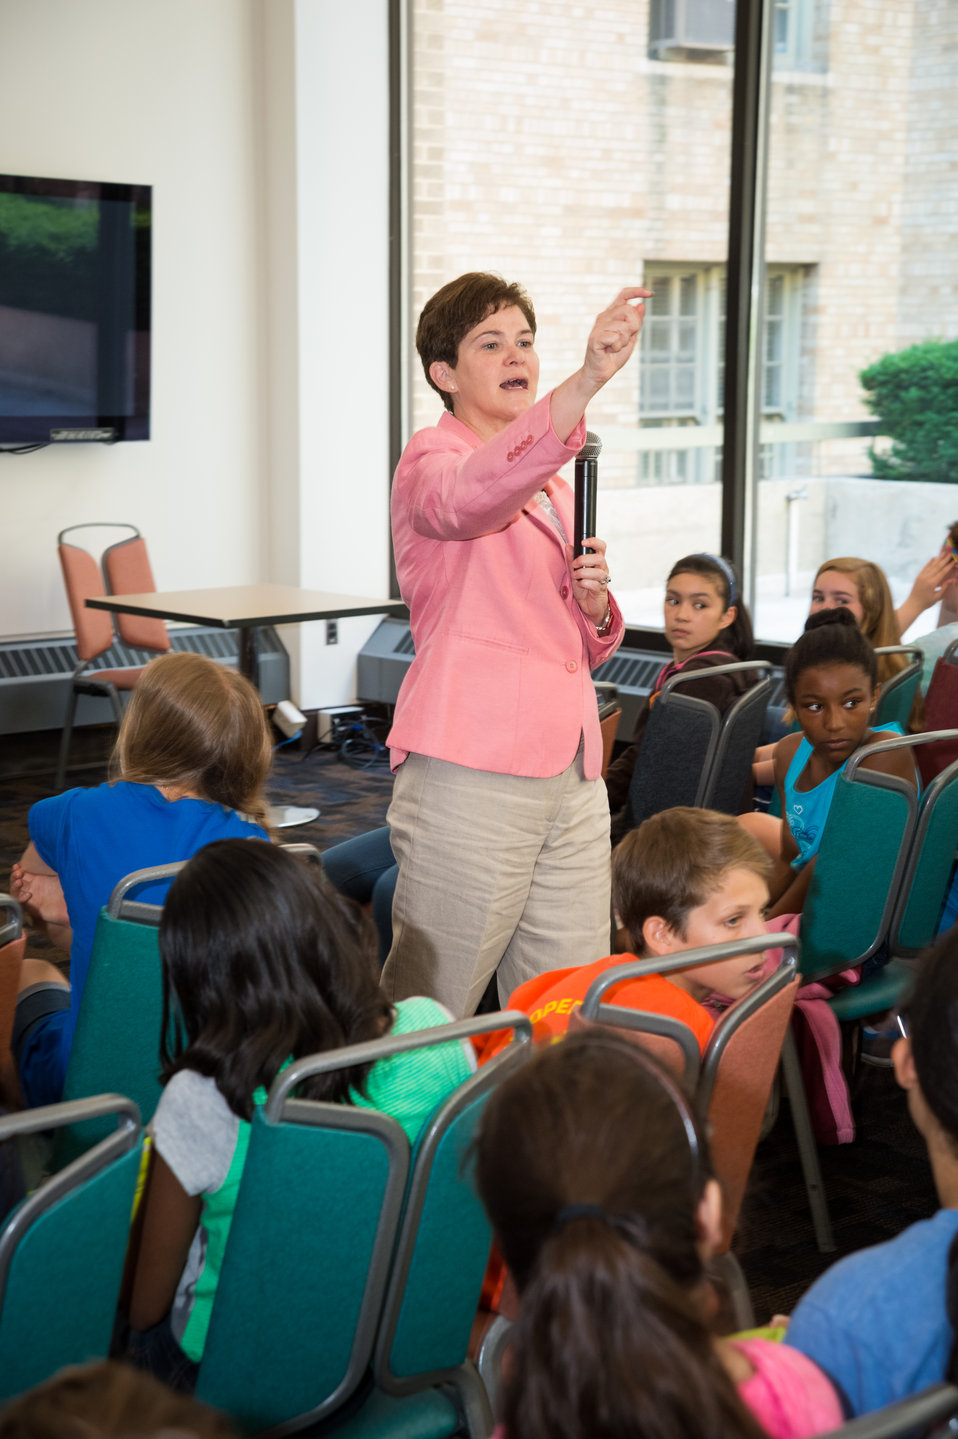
Agriculture Deputy Secretary Krysta Harden speaking with students from the Alice Deal Middle School, Washington, DC students during their visit to the United States Department of Agriculture (USDA) in Washington, DC, Wed. Jun. 4, 2014. The students studied hunger, food security, how to prevent hunger and organizations involved in solving hunger situations nationally and worldwide. A lot of what they learned is administered through the USDA.